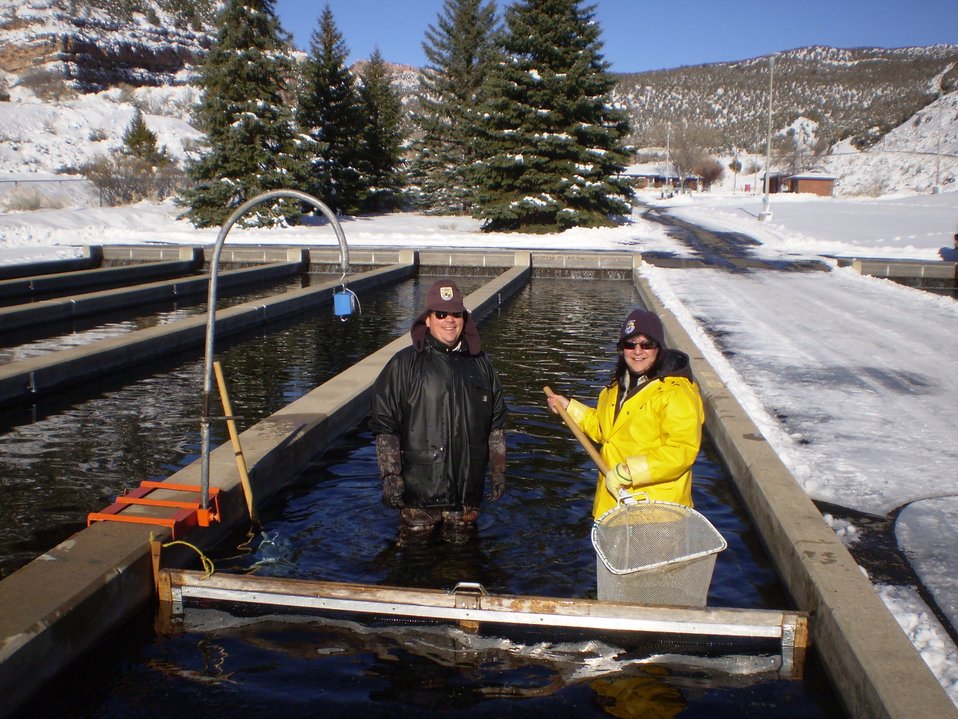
Jones Hole National Fish Hatchery

Jones Hole NFH staff working hard to maintain the raceways! These canals replicate an actual river allowing the fish to learn basic skills before being released into the wild.